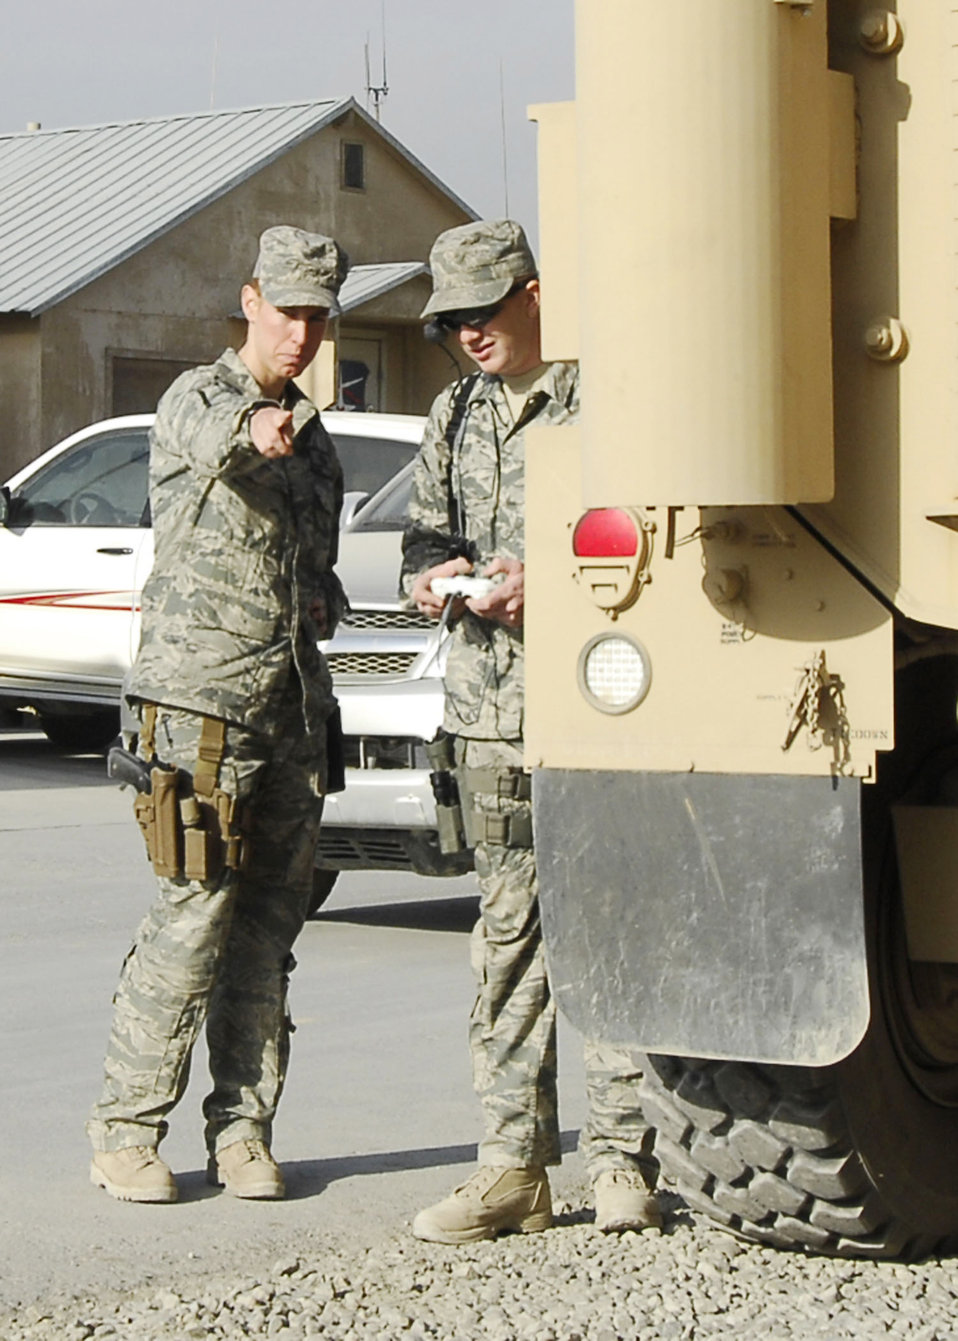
The weapons of warfare adapt with the age of Airmen

Staff Sgt. Elizabeth Spradley (left) gives directions to Senior Airman James Dobrynski, both explosive ordnance disposal technicians at Bagram Airfield, Afghanistan, during training Oct. 26, 2009. EOD teams use robots during missions to move or disarm improvised explosive devices and look for additional IEDs. They are joint expeditionary tasked Airmen attached to the 741st EOD Battalion. Sergeant Spradley, an Albuquerque, N.M., native, is deployed from Spangdahlem Air Base, Germany. Airman Dobrynski is deployed from Luke Air Force Base, Ariz., and hails from St. Louis, Mo.